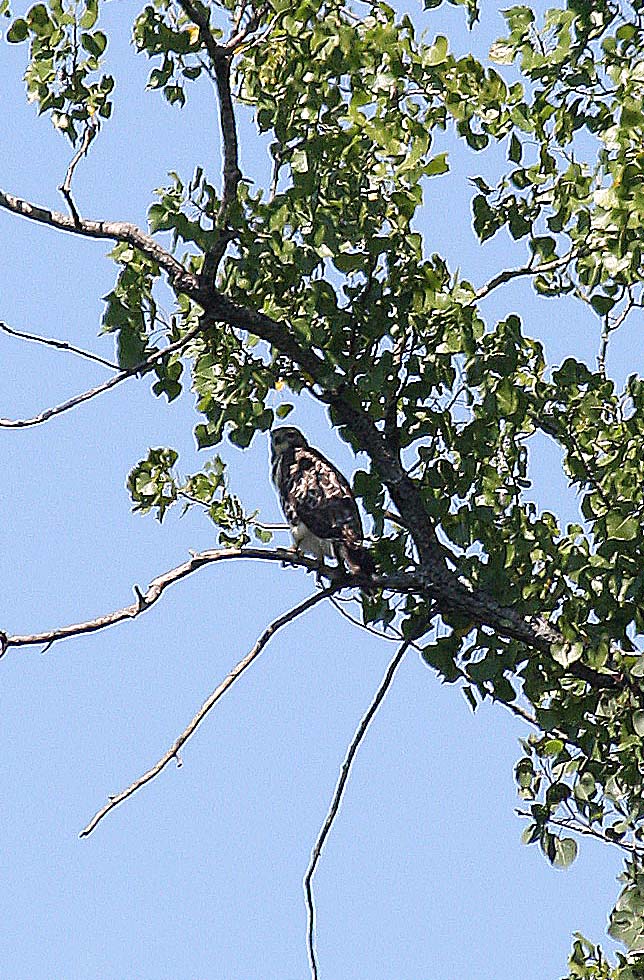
Hawk perched in a tree at Great Meadows National Wildlife Refuge, MA.